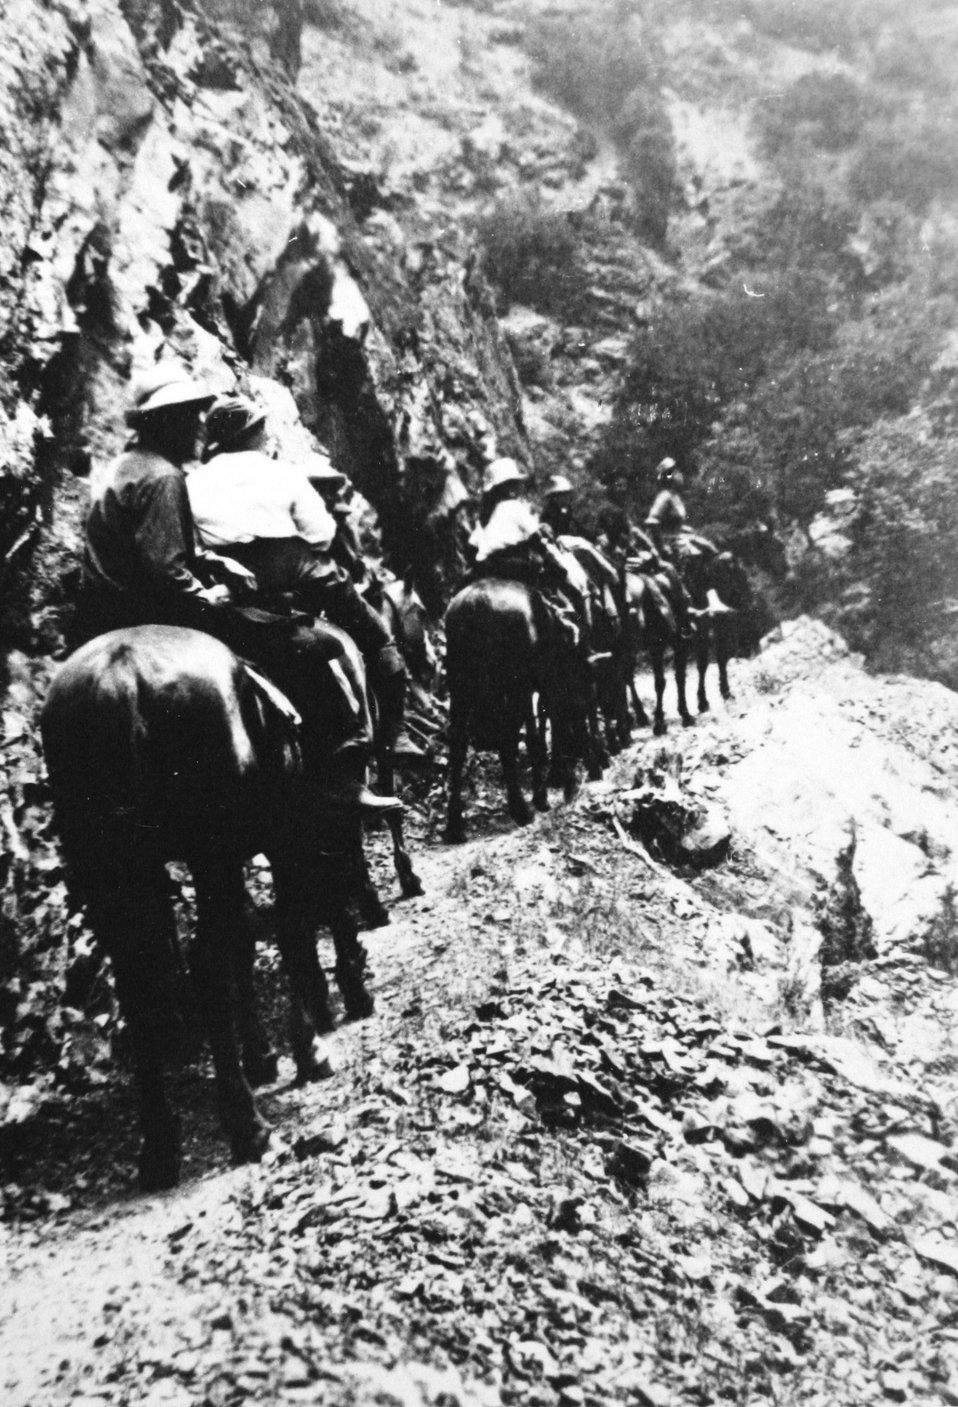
Mule creek Trail